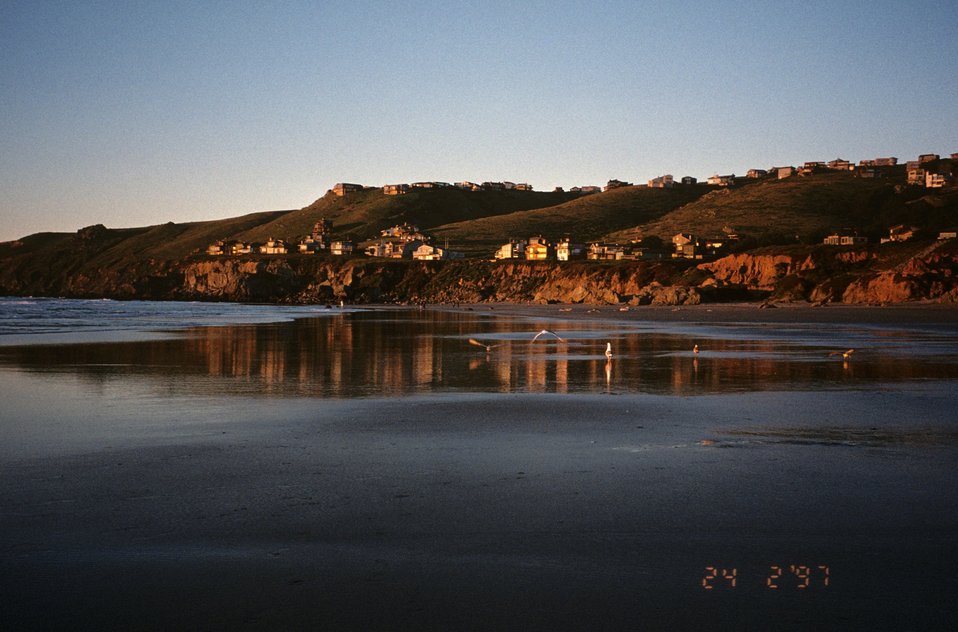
Dillon Beach